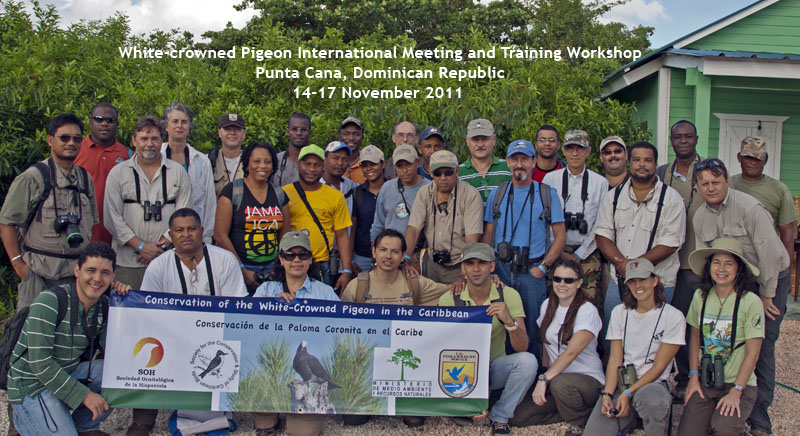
WCPI Workshop - group photo-small Credit SCSCB

White-crowned pigeon international meeting and training workshop run by SCSCB with support from USFWS.